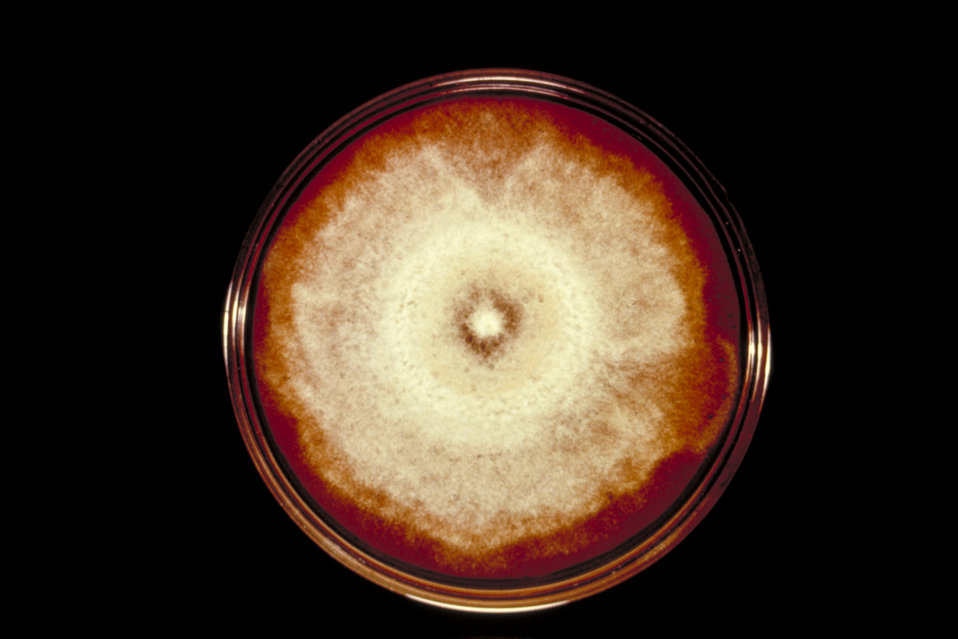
Plate culture of Blastomyces dermatitidis, strain A-507. Mycelial phase.